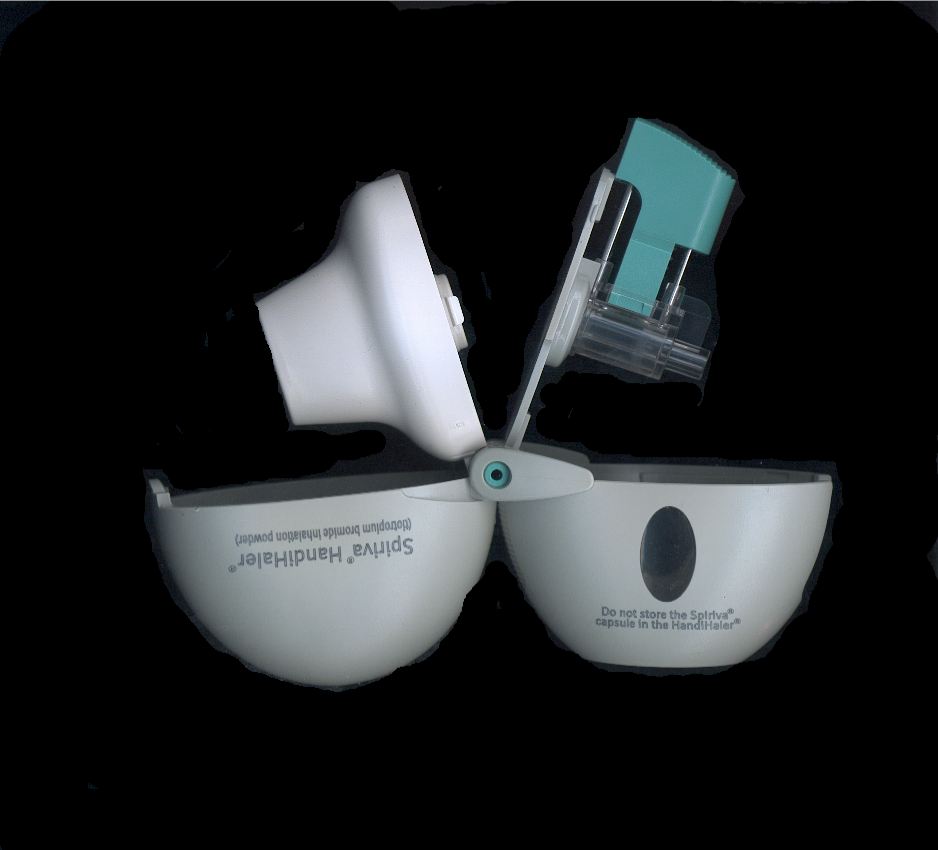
Self scanned image